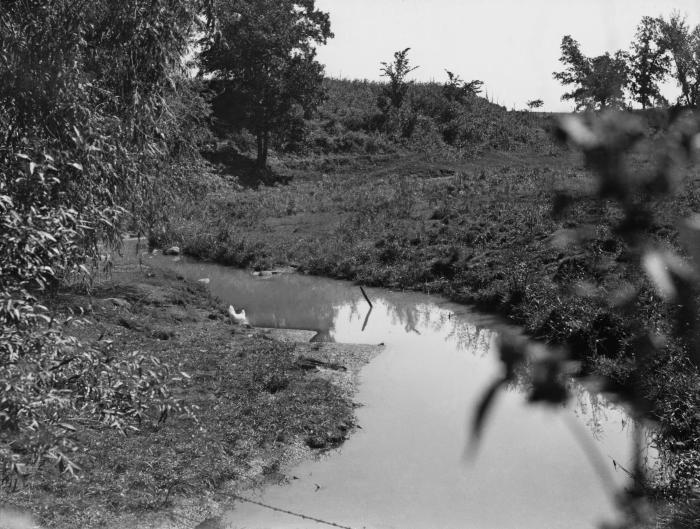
This historic 1936 photograph depicted Sucker Creek at the location of its first bridge, above Minnesota's Cokato Lake. Its purpose was to show the effects of industrial pollution on bodies of freshwater, and upon the native fish and wildlife.